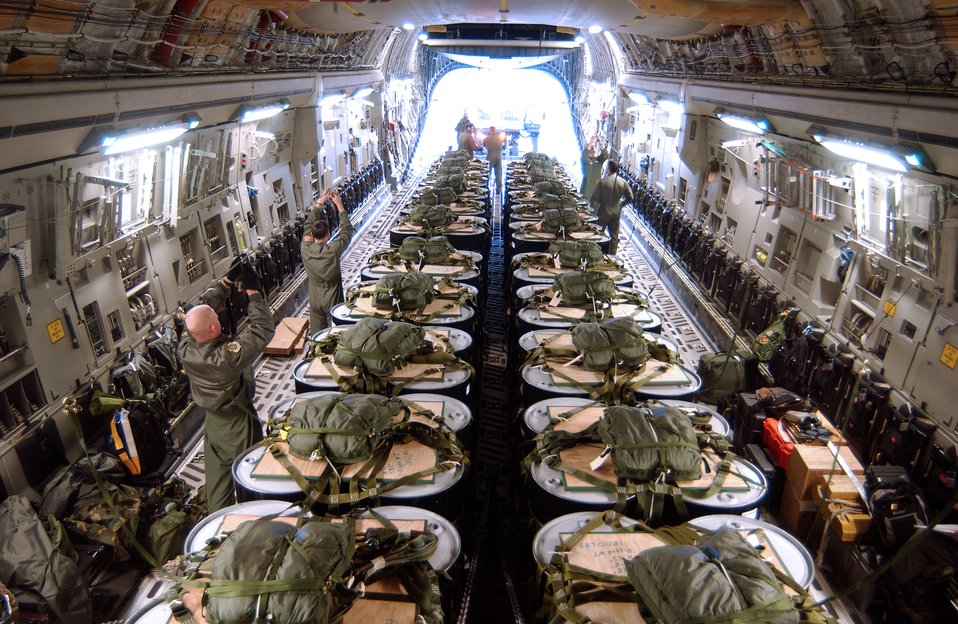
C-17 makes first polar airdrop

MCCHORD AIR FORCE BASE, Wash. -- Airmen here load pallets of fuel onto a C-17 Globemaster III to support the C-17 Globemaster III's first polar airdrop. About 10,000 gallons of fuel were dropped to help National Science Foundation scientists near the North Pole.